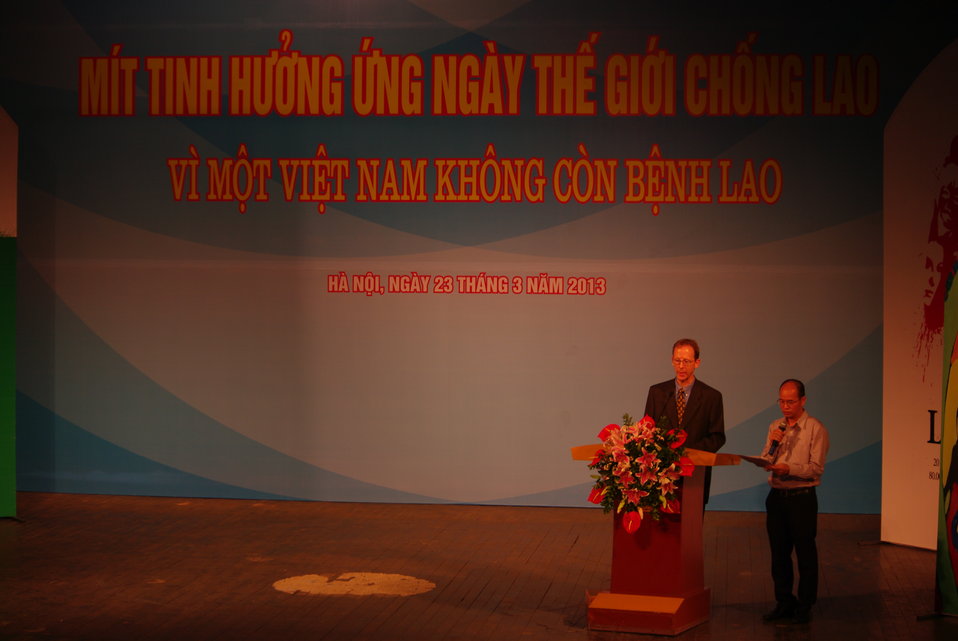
USAID Mission Director Joakim Parker speaks at Vietnam's World TB Day Event in Hanoi

March 23, 2013